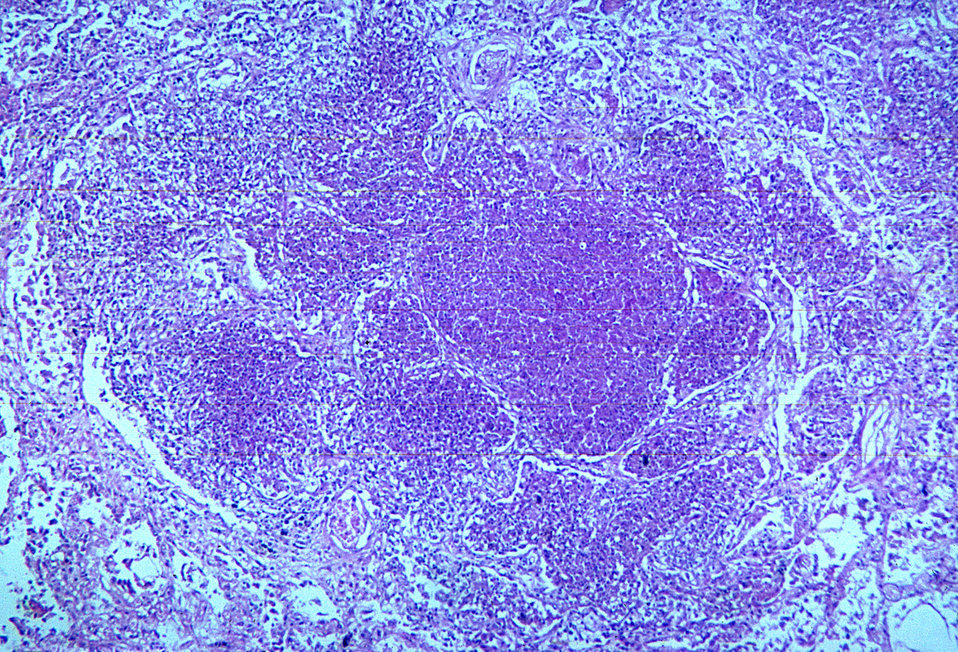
This photomicrograph depicts the histopathologic changes associated with nocardiosis of the lung.